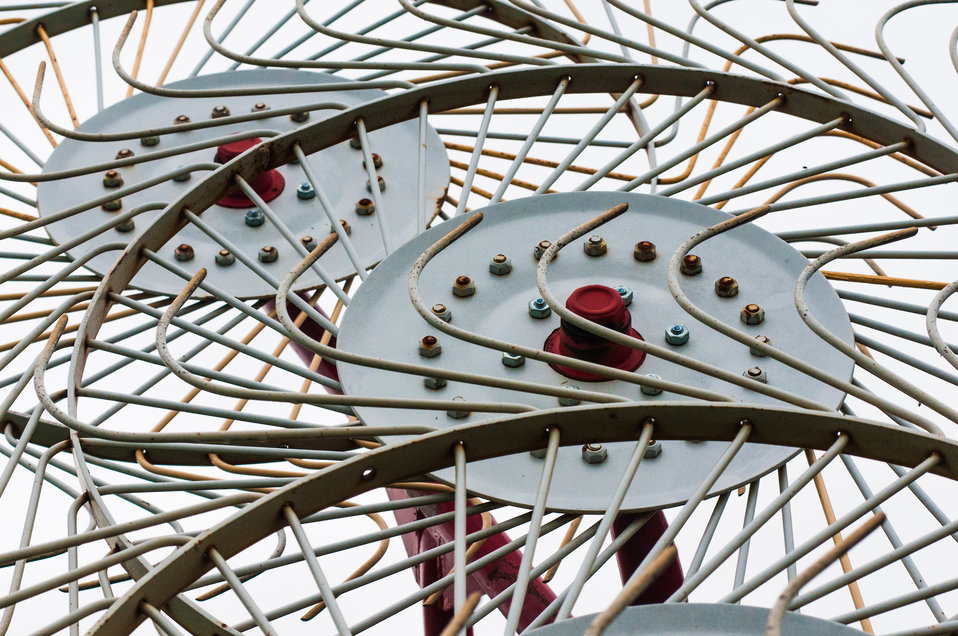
Farm equipment at Nick’s Organic Farm, owned by Nick Maravell in Adamstown, MD on Friday, July 12, 2013. The farm produces Black Angus beef, chicken, turkey, eggs, hay, soybeans, corn, alfalfa, orchard grass, rye; and other crops. The cattle are 100% grass-fed receiving certified organic pasture, certified organic hay (in winter), water and mineral salts mixed with sea kelp. The cattle are not fed hormones, antibiotics or animal products. Poultry feed from grain is ground from organic grain. The poultry also graze on organic pastures. The farm has conducted on-farm research with federal, state and non-profit agencies to refine organic practices. An organization such as the U.S. Department of Agriculture (USDA) Agricultural Research Service (ARS) center in Beltsville has been able to conduct research to improve organic crops and to breed and manage the cattle so that they have. George Kloph is the farm assistant at this site.